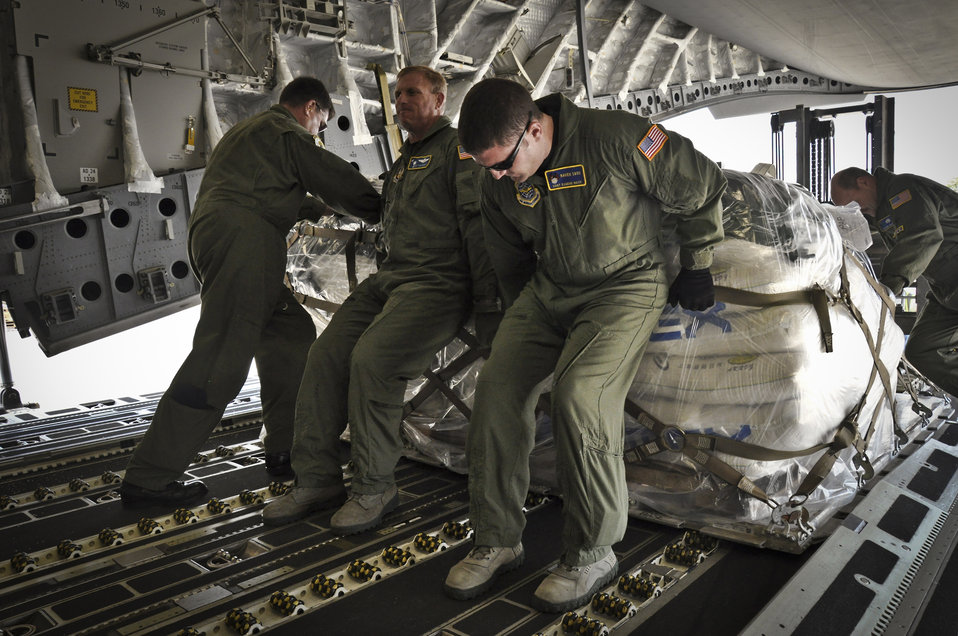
Aid to Haiti

Loadmasters with the 300th Airlift Squadron help push a pallet of rice onto a forklift July 1, 2011, in Haiti, during a humanitarian-aid mission.